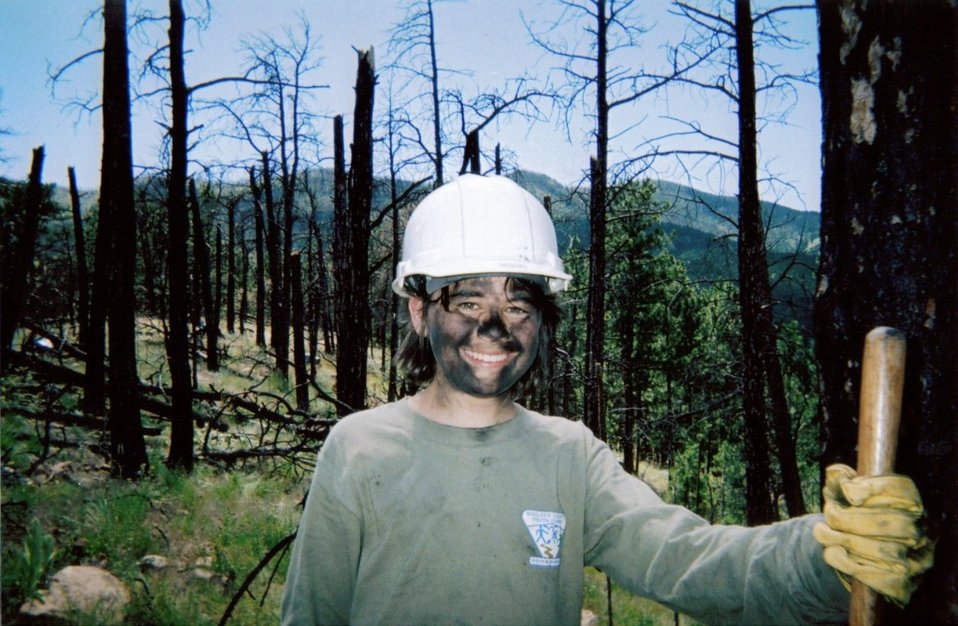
Uploaded by request of Nik Brockman

Taken at Heil Valley Ranch, Boulder County, Colorado, USA

Corpsmember Jay LeCavalier gets dirty as he works hard to protect Heil Valley Ranch from future forest fires.